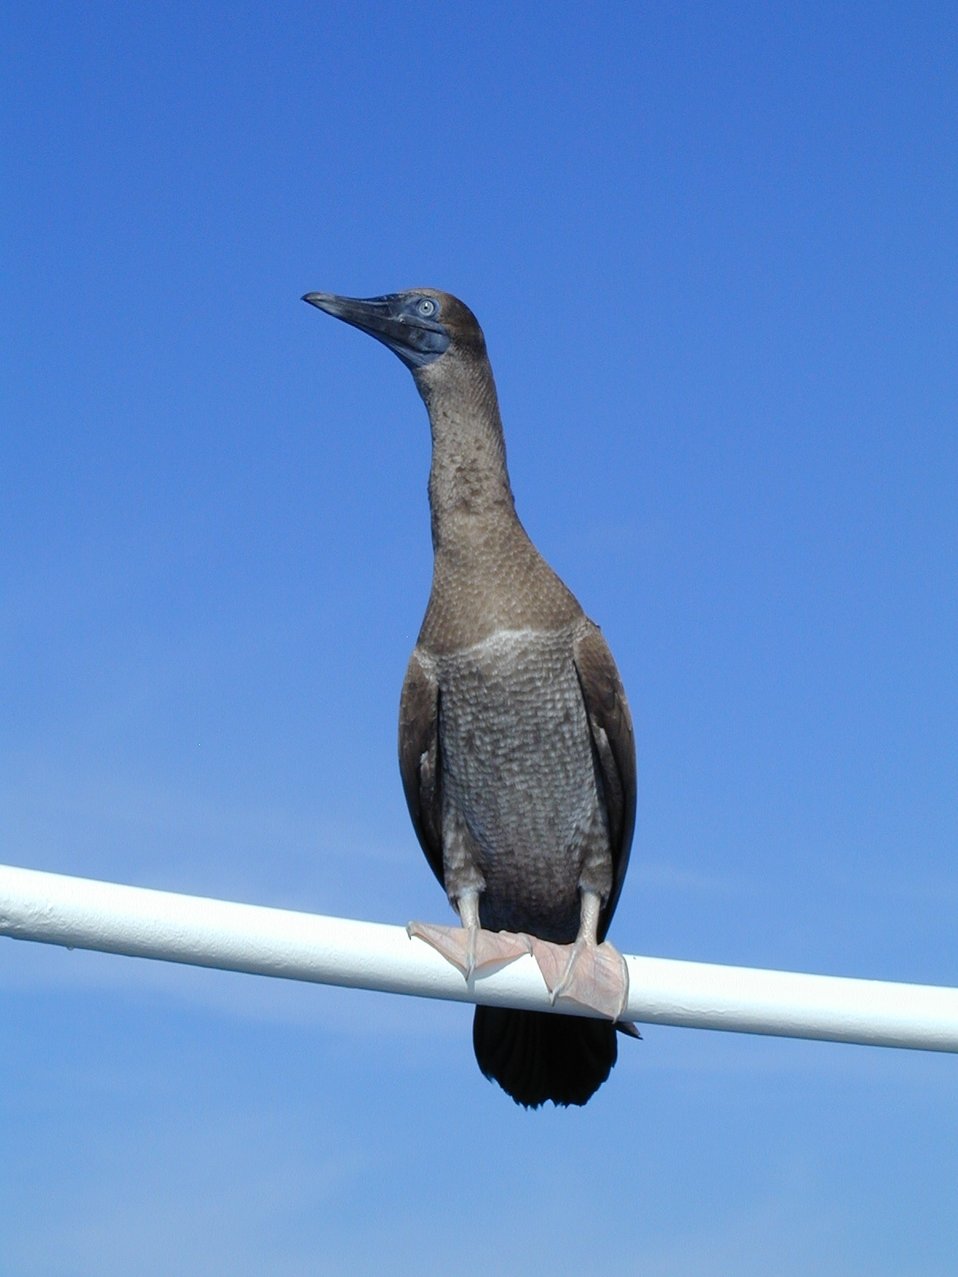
Closeup of a boobie.